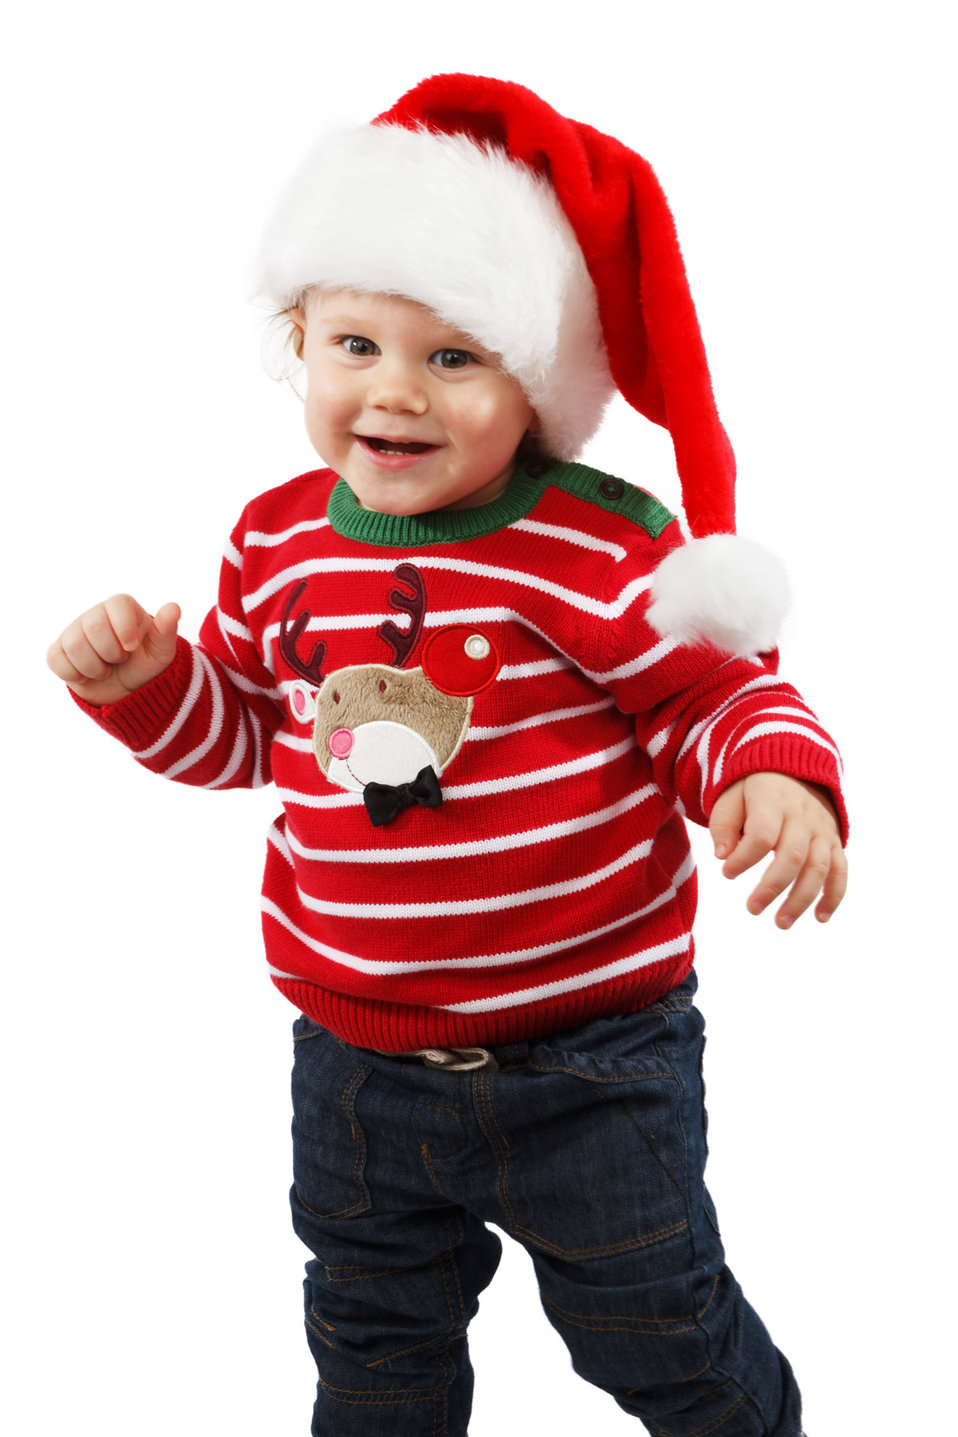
Little santa claus isolated on white background.